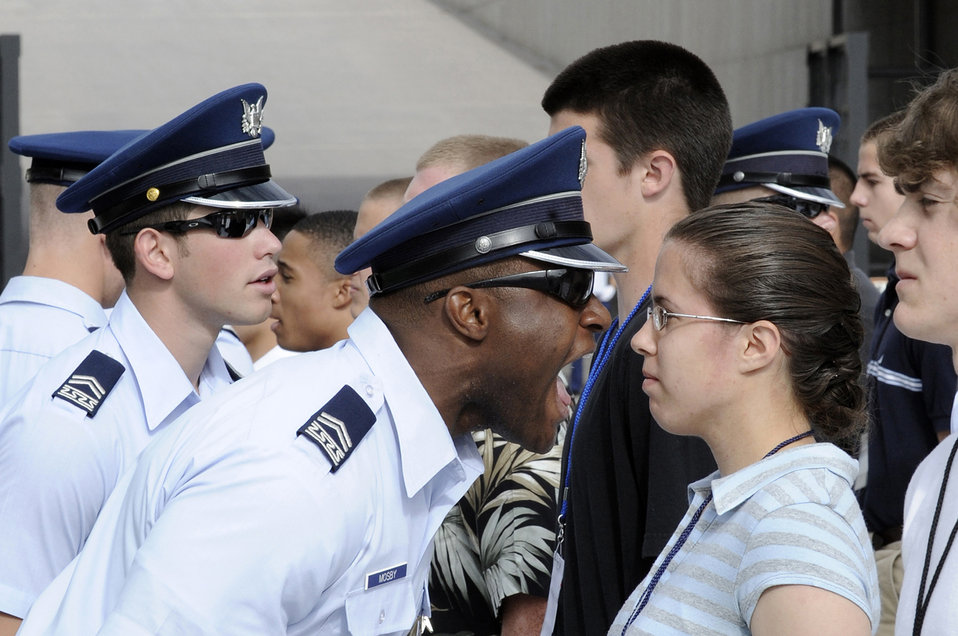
Academy Class of 2013 arrives for inprocessing

Cadet 2nd Class Mark Mosby ensures new basic cadets follow cadre instructions during cadet inprocessing June 25 at the U.S. Air Force Academy in Colorado Springs, Colo. Approximately 1,400 cadets were selected for the Class of 2013 out of nearly 10,000 applicants.